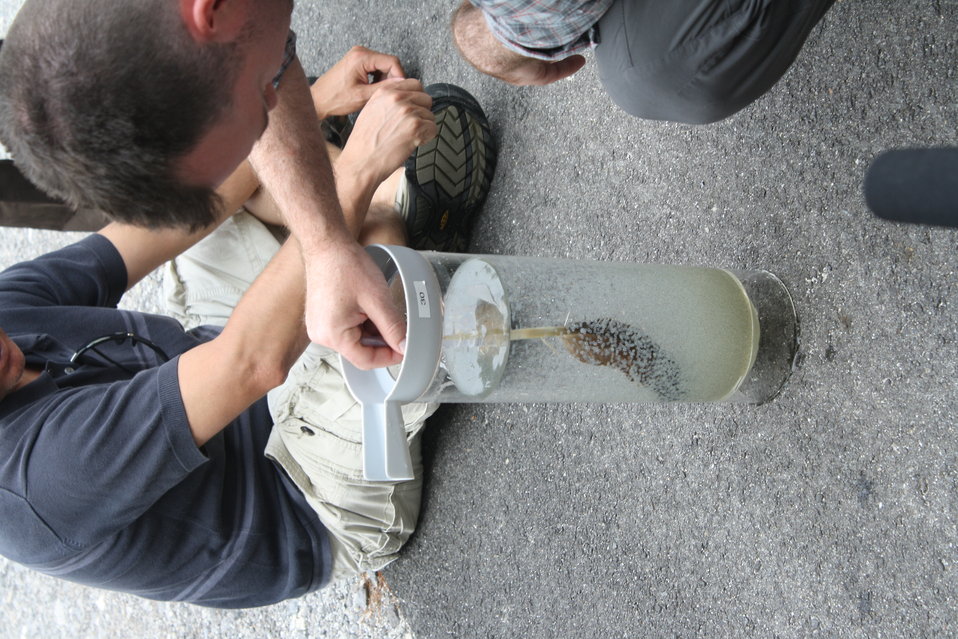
Nashua National Fish Hatchery welcomes regional office employees

Gently stirring shad eggs in sunlight to promote hatching.